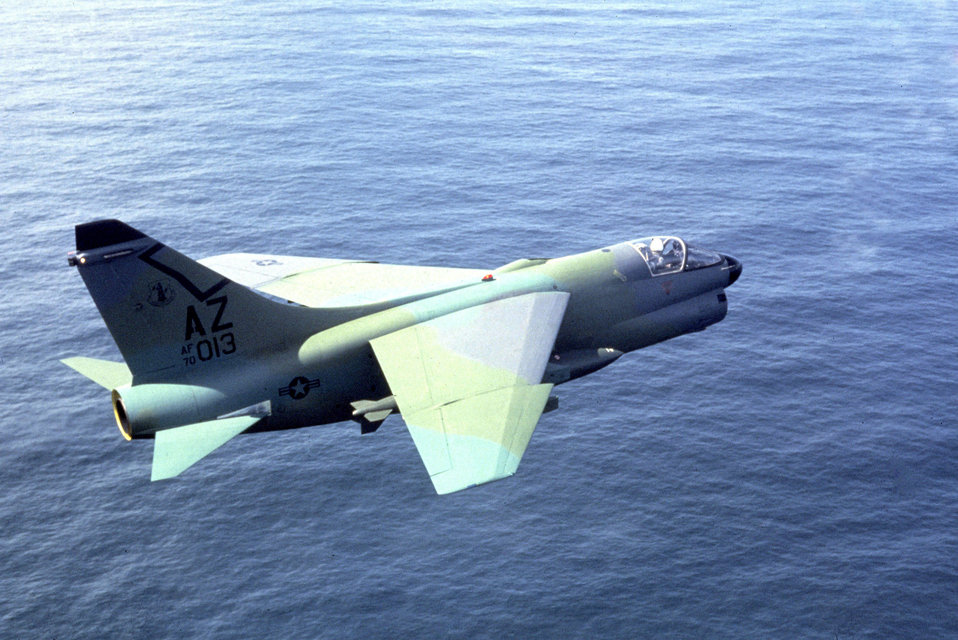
A-7 Corsair II. 1970's